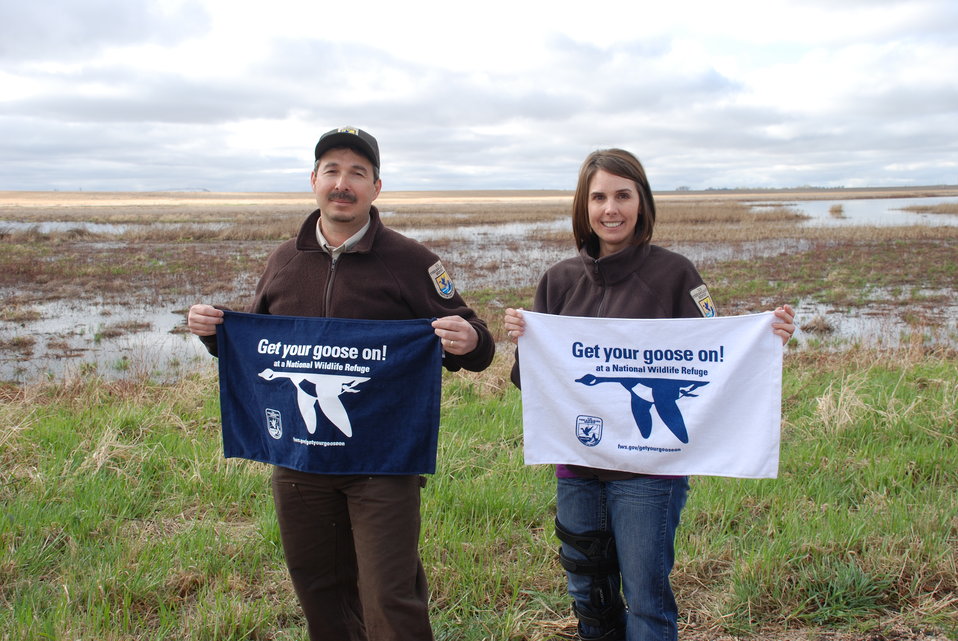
Get Your Goose On! at the Rainwater Basin Wetland Management District